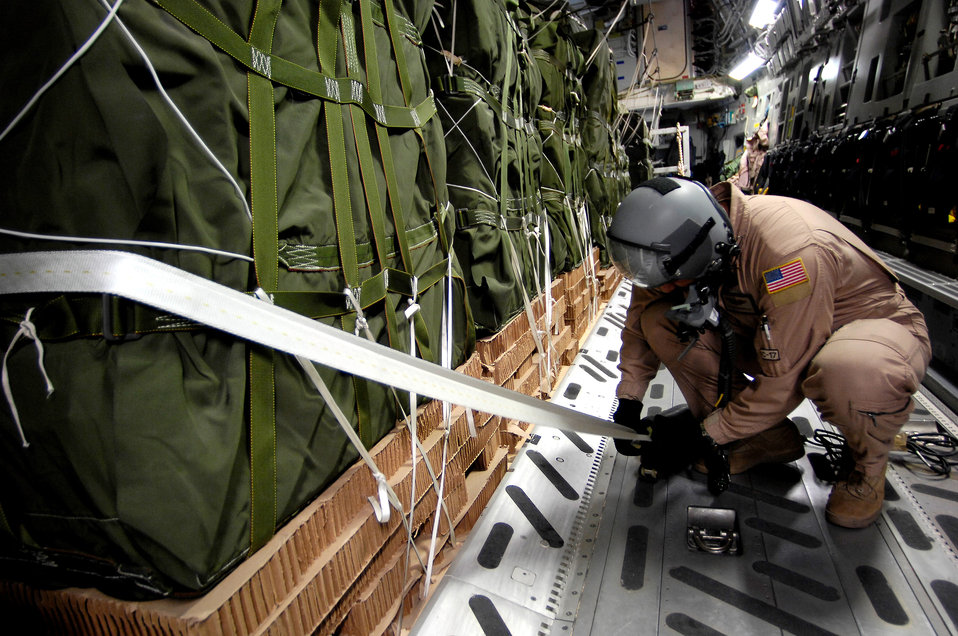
C-17 crews make record airdrop

Tech. Sgt. Marvin Mosley checks one of the gates securing the bundles before dropping them from a C-17 Globemaster III Oct 11 over Afghanistan. Sixty-two cargo bundles were dropped from two C-17s to a drop zone in Afghanistan. This was the first time a combat cargo drop of this magnitude has taken place from two C-17s in formation over one drop zone. Sergeant Mosley is a loadmaster with the 817th Expeditionary Airlift Squadron at Manas Air Base, Kyrgyzstan.